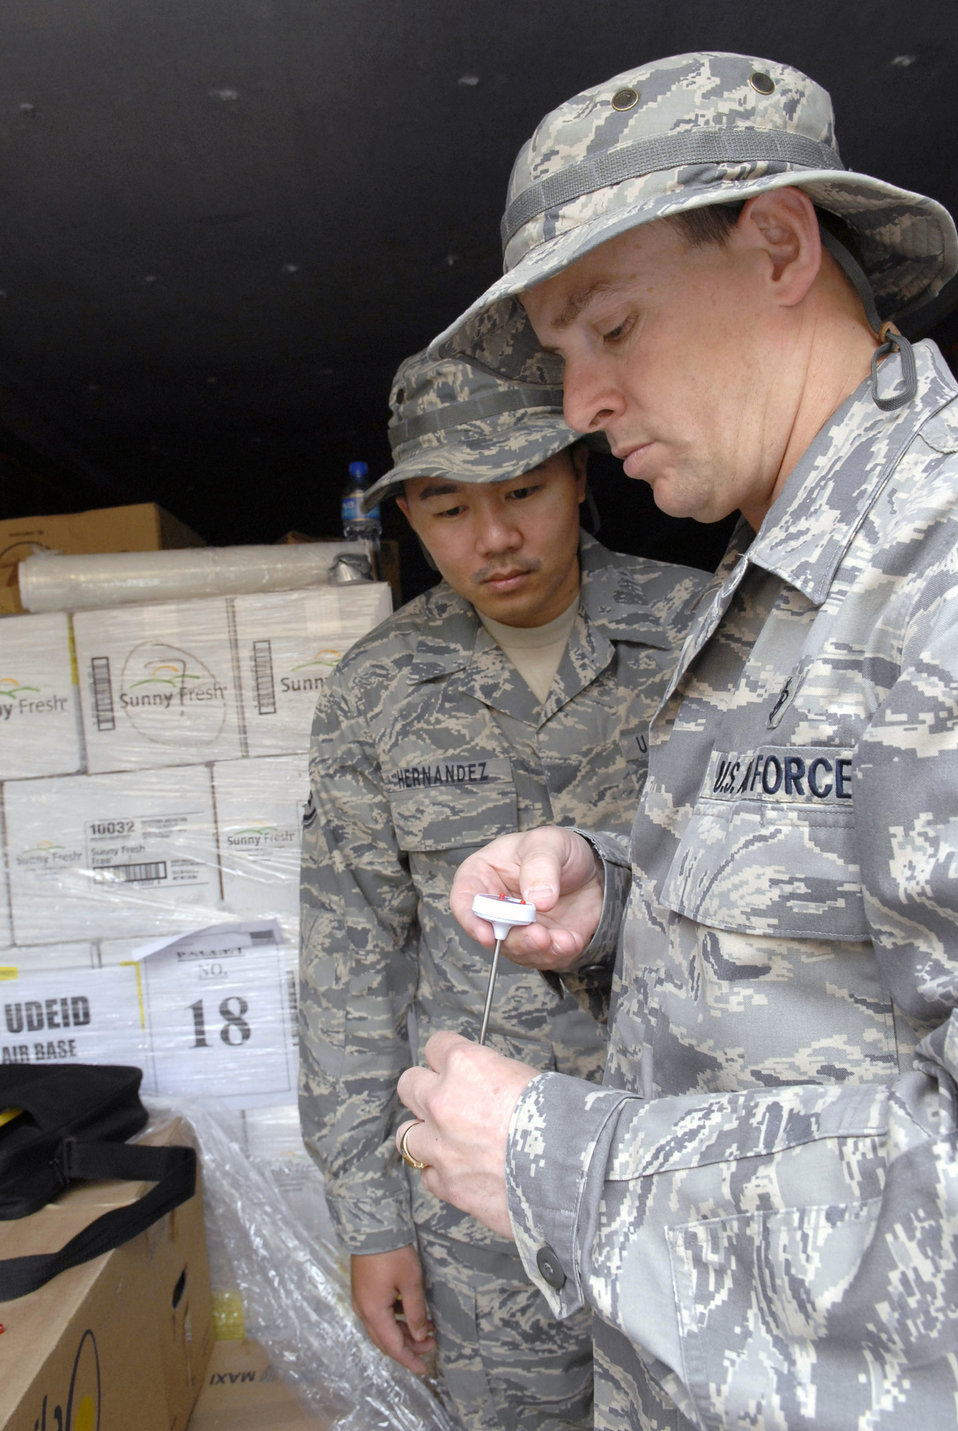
Public health maintains high standards, healthy force

Staff Sgt. Rommel Hernandez and Tech. Sgt. Duwayne Foster take the temperature of an egg to ensure it is properly refrigerated during their monthly dining facility inspection April 18 at an air base in Southwest Asia. The public health office inspects the dining facilities, checks personnel medical records, and provides medical intelligence for forward deployers. Sergeant Hernandez is a 379th Expeditionary Medical Group public health inspector and hails from Arlington, Va. Sergeant Foster is the 379th EMDG NCO in charge of public health and hails from Mobile, Ala. Both are deployed from Keesler Air Force Base, Miss.